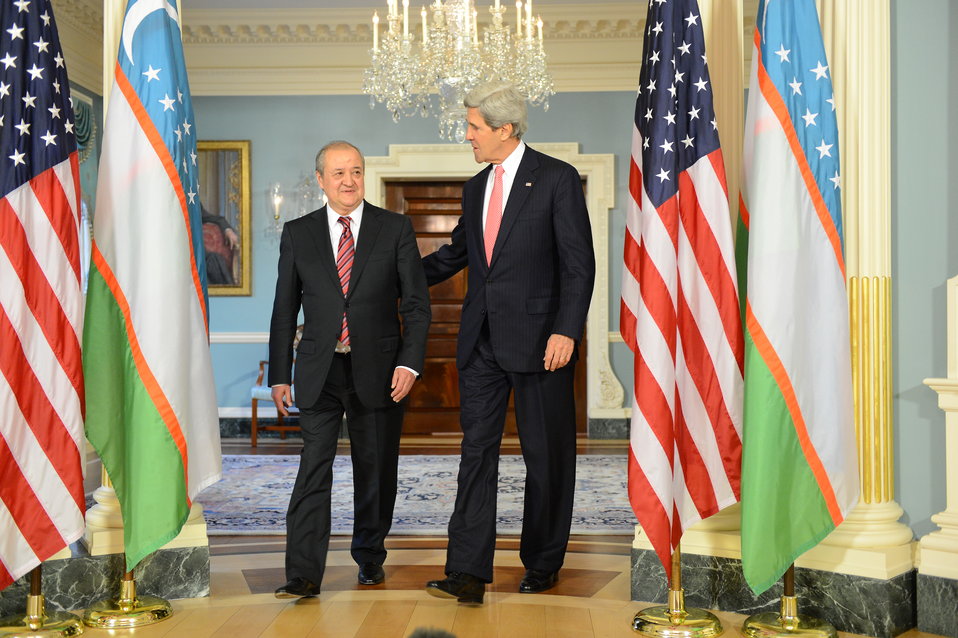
Secretary Kerry Meets With Uzbek Foreign Minister Kamilov

U.S. Secretary of State John Kerry and Uzbek Foreign Minister Abdulaziz Kamilov prepare to address reporters before their bilateral meeting at the U.S. Department of State in Washington, D.C., on March 12, 2013.